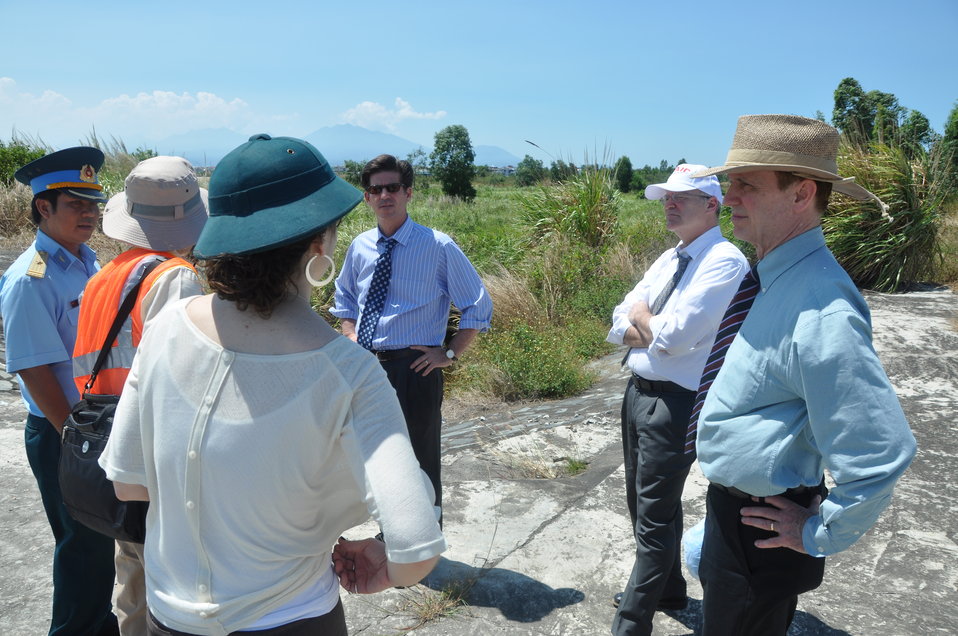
USAID Deputy Administrator Donald Steinberg visits Danang Airport where dioxin remediation project will be conducted

USAID Deputy Administrator Donald Steinberg Visits Vietnam: USAID Photo